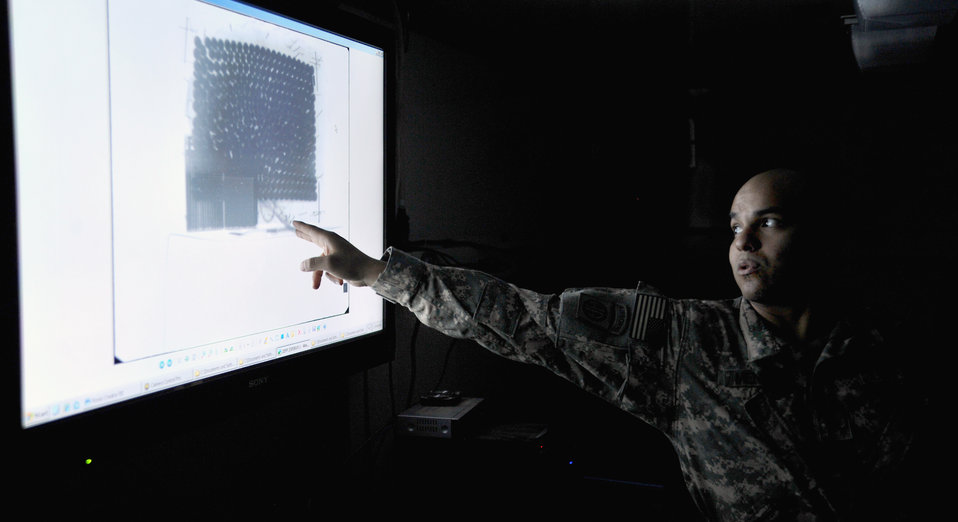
Joint task force Airmen

Army Sgt. Eliot Mendoza shows an X-ray photograph of an improvised explosive device Dec. 8, 2010, during a tour on Camp Victory, Iraq. Sergeant Mendoza is a technician with the Combined Explosive Exploitation Cell triage laboratory for Combined Joint Task Force Troy.